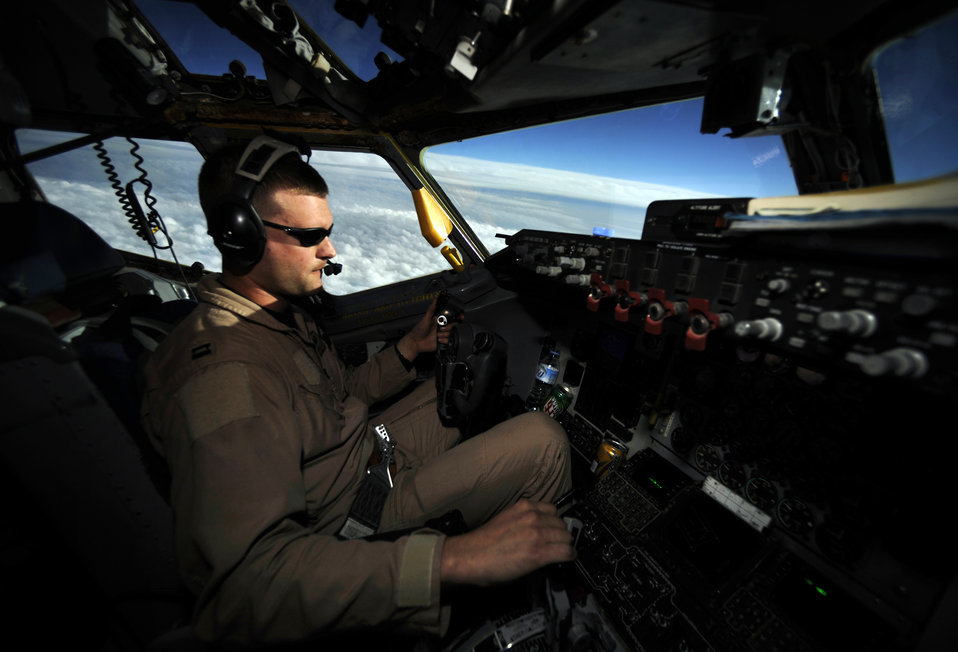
Refuelers keep mission soaring

Capt. Micah Vander Veen, assigned to the 340th Expeditionary Air Refueling Squadron at an air base in Southwest Asia, pilots a KC-135 Stratotanker on an air refueling mission in support of Operation Iraqi Freedom.